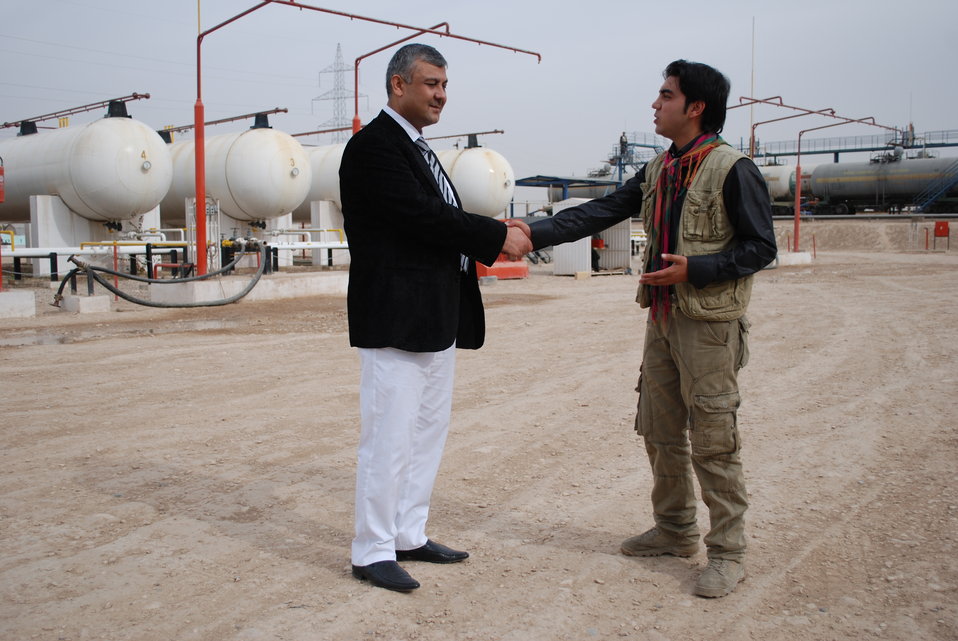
'On the Road' in Balkh Province